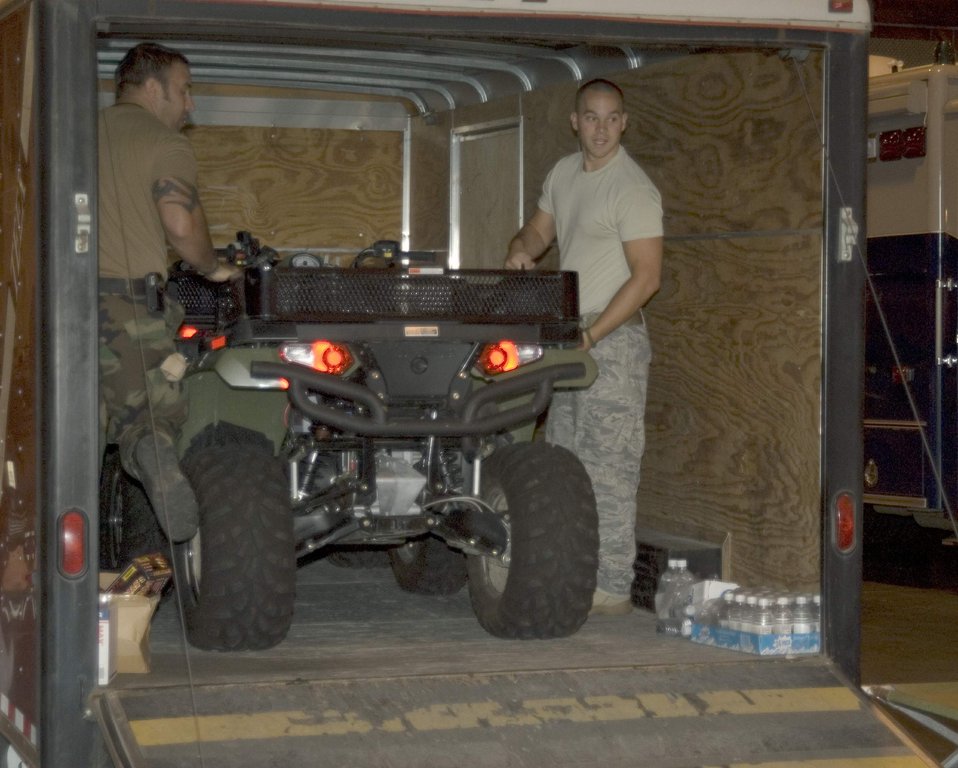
Special tactics unit arrives in Houston to aid Ike relief

Staff Sgt. James McGregor and Tech. Sgt. Zach Shaffer uncrate an all-terrain vehicle Sept. 12 at the Reliant Center in Houston. The Oregon Air National Guard's 125th Special Tactics Squadron is in Houston to assist with Hurricane Ike relief efforts. Sergeant McGregor is a parachute rigger, and Sergeant Shaffer is a radio maintainer, and both from the 125th STS.